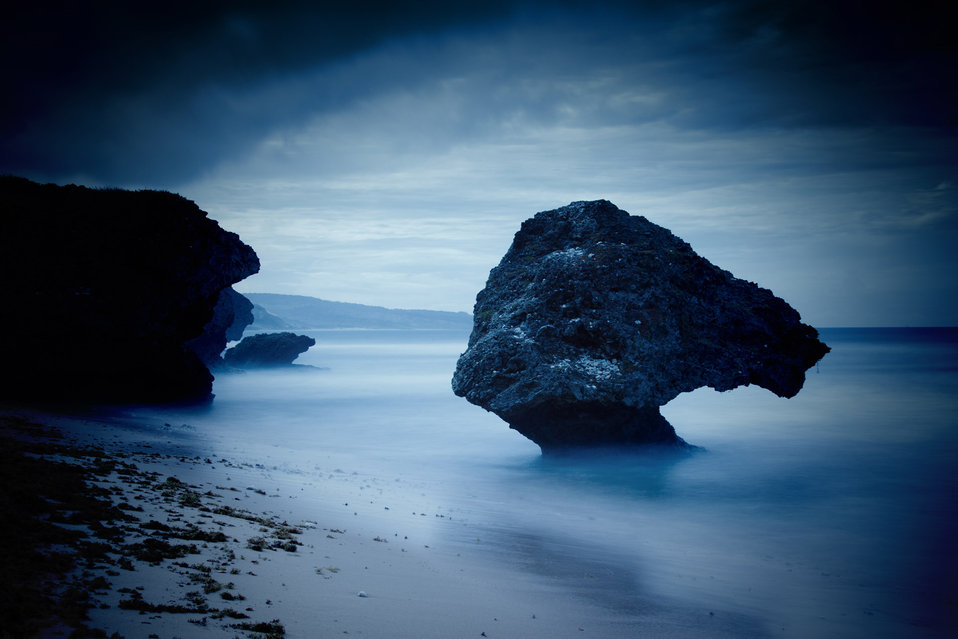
Rock in the sea at bathsheba in barbados.